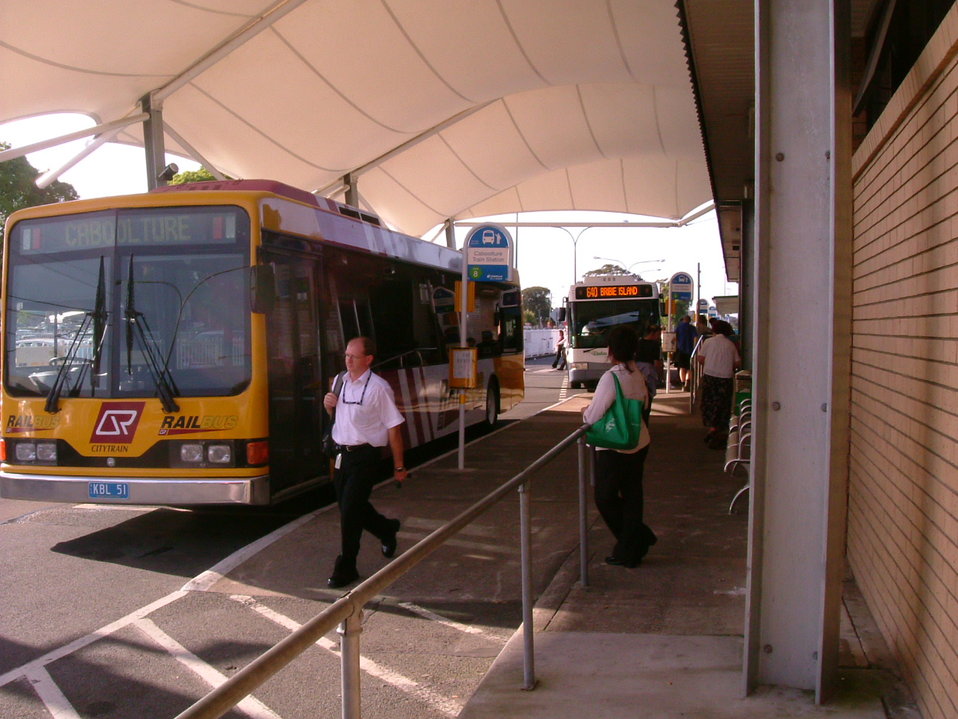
Custom Coaches bodied Mercedes-Benz O 405 NH (KBL 51, built 2000). Caboolture railway station, Queensland, Australia.